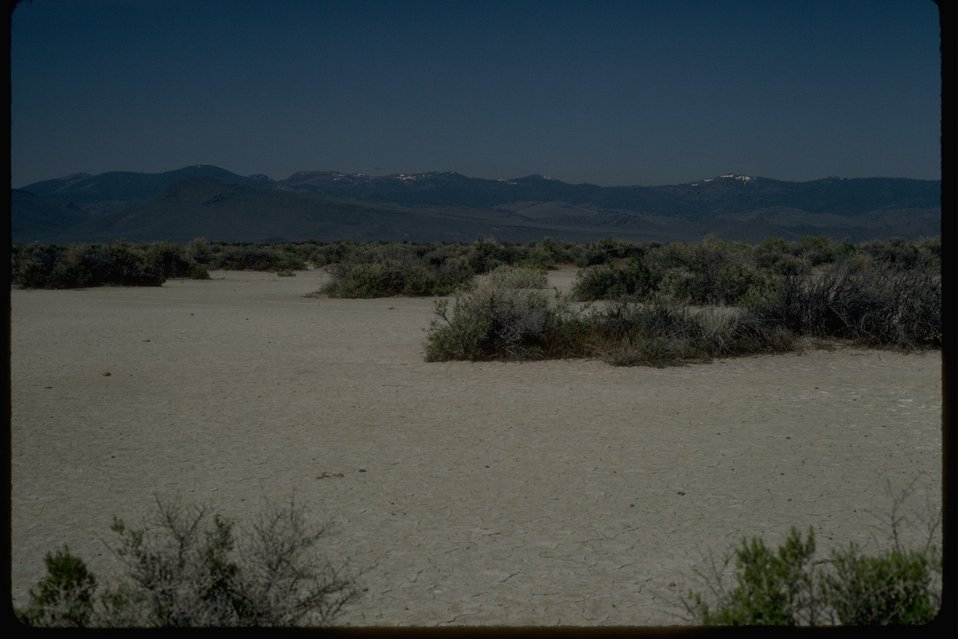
Desert playa/black greesewood near Denio.